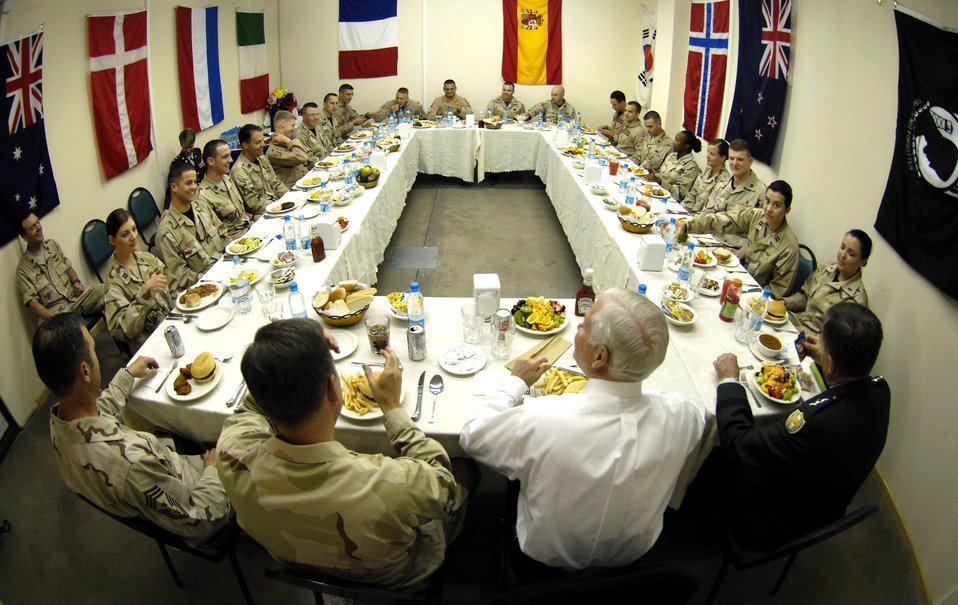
Secretary Gates pays a visit

Secretary of Defense Robert M. Gates meets with junior Air Force officers deployed to Manas Airbase, Kyrgyzstan, June 5. Secretary Gates held the informal meeting to hear directly from the troops about their concerns and to answer their questions.